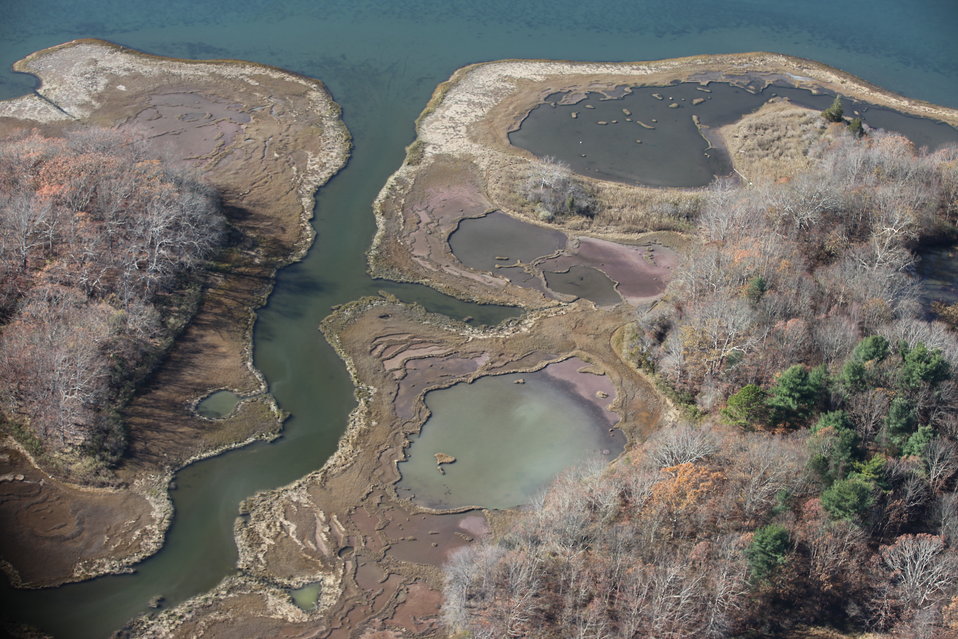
Aerial view of John H. Chafee National Wildlife Refuge.